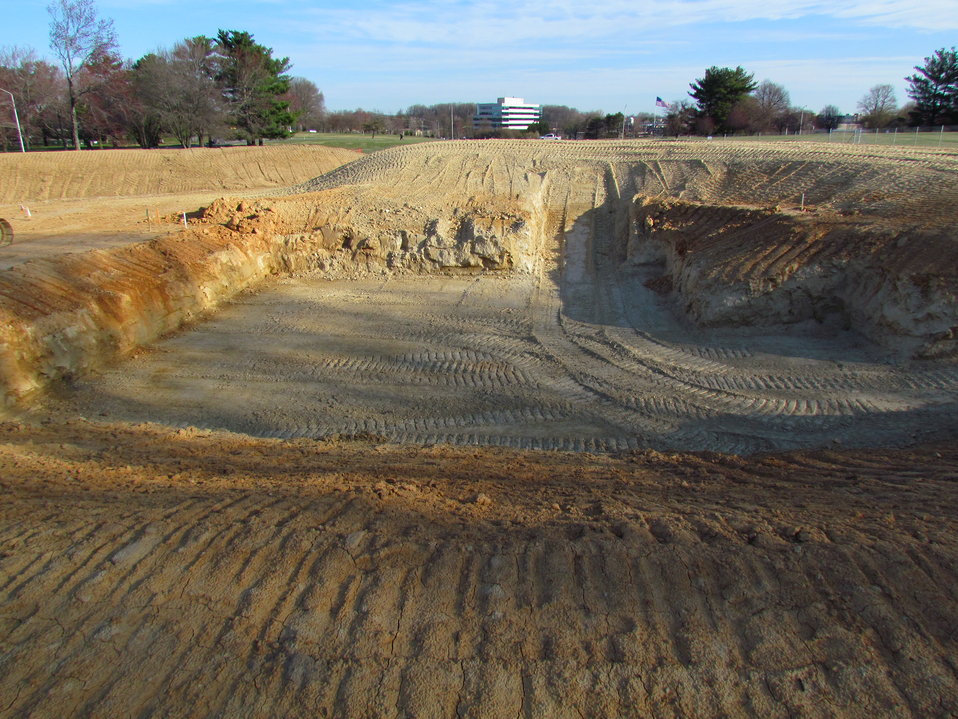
Net-Zero Energy Residential Test Facility - Construction photo showing excavation of site to permit construction of facility.